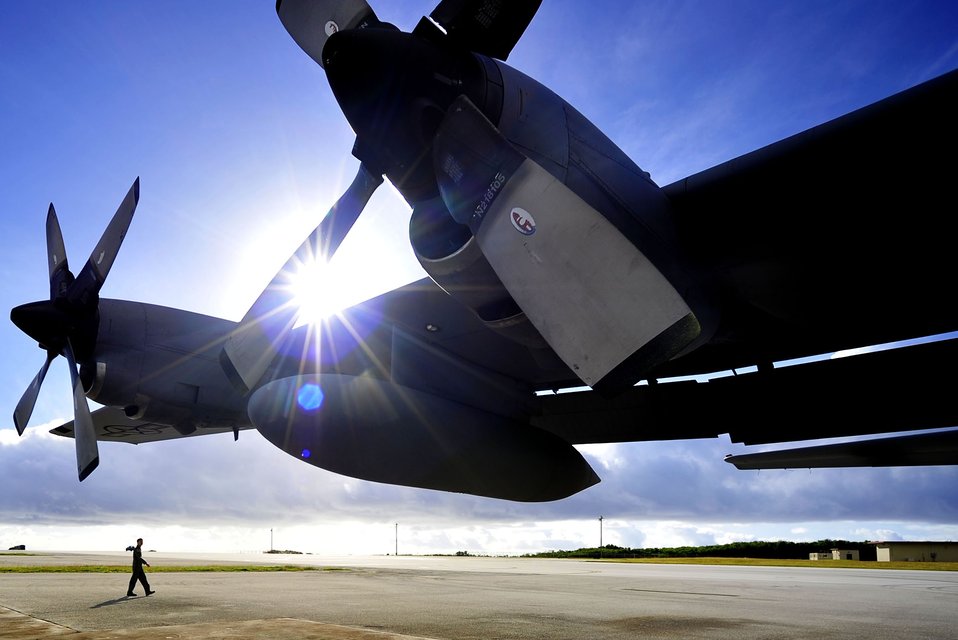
Inspection in the shadows

Capt. Ryan Wong performs a preflight walk-around check of his C-130 Hercules Feb. 23, 2011, during exercise Cope North at Andersen Air Force Base, Guam. Captain Wong is a C-130 pilot assigned to the 36th Airlift Squadron at Yokota Air Base, Japan.